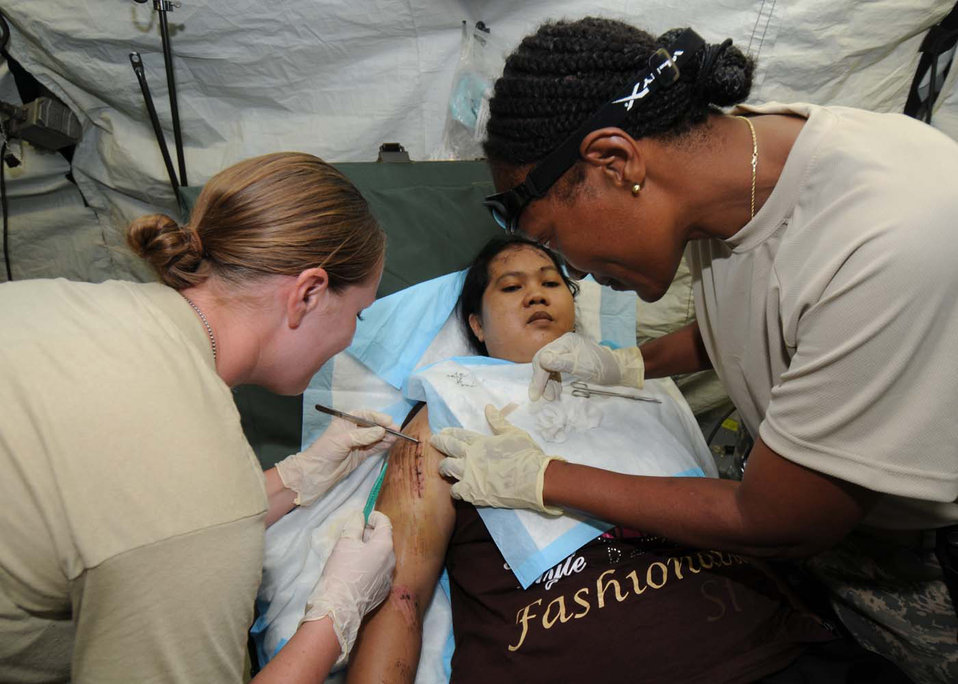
Earthquake relief

Staff Sgt. Beth Sherman (left) and Maj. Brenda Parker remove sutures in a mobile field hospital in Padang, Indonesia, Oct. 8. Sergeant Sherman, an individual duty medical technician, and Major Parker, a nurse, are deployed from the 36th Medical Group at Andersen Air Force Base, Guam, as part of an Air Force humanitarian assistance rapid response team.